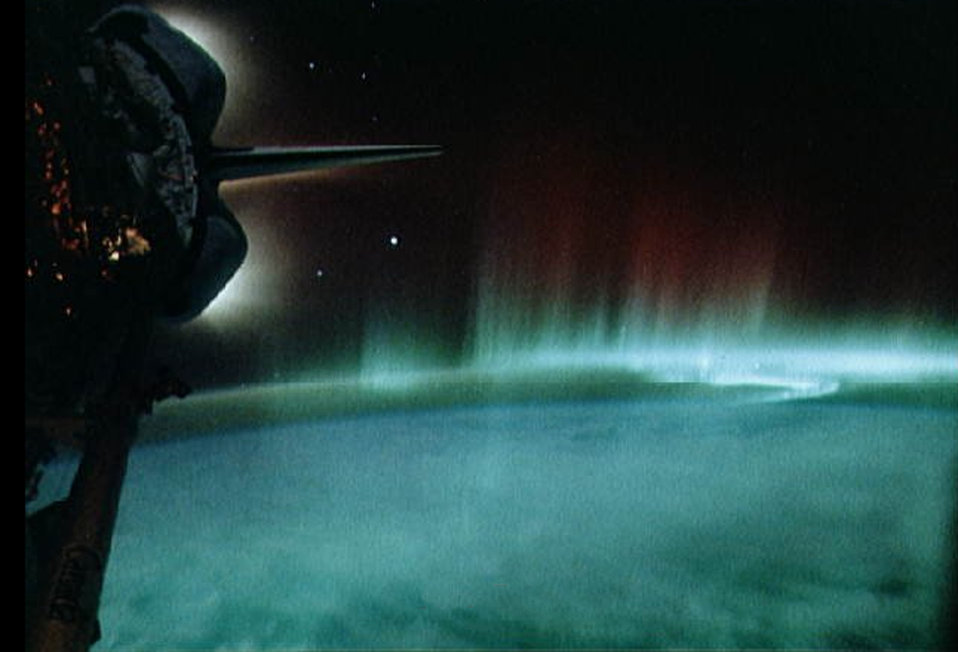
"Auroras Underfoot" : (NASA Solarsystem Collection)